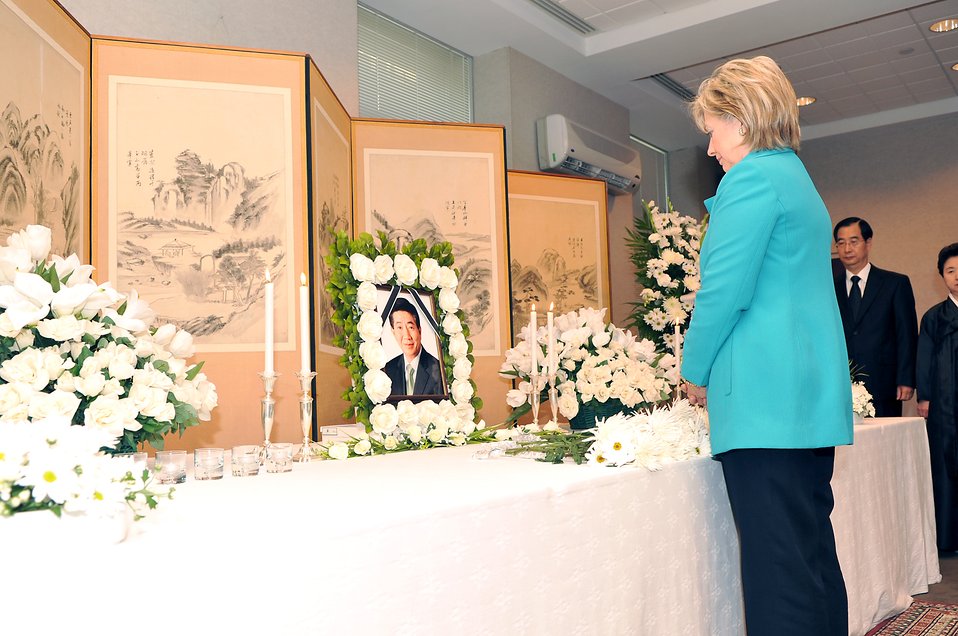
Secretary Clinton Signs Condolence Book for Former South Korean President Roh

U.S. Secretary of State HIllary Rodham Clinton signs the condolence book for former South Korean President Roh at the Republic of Korea Embassy in Washington, DC May 28, 2009.